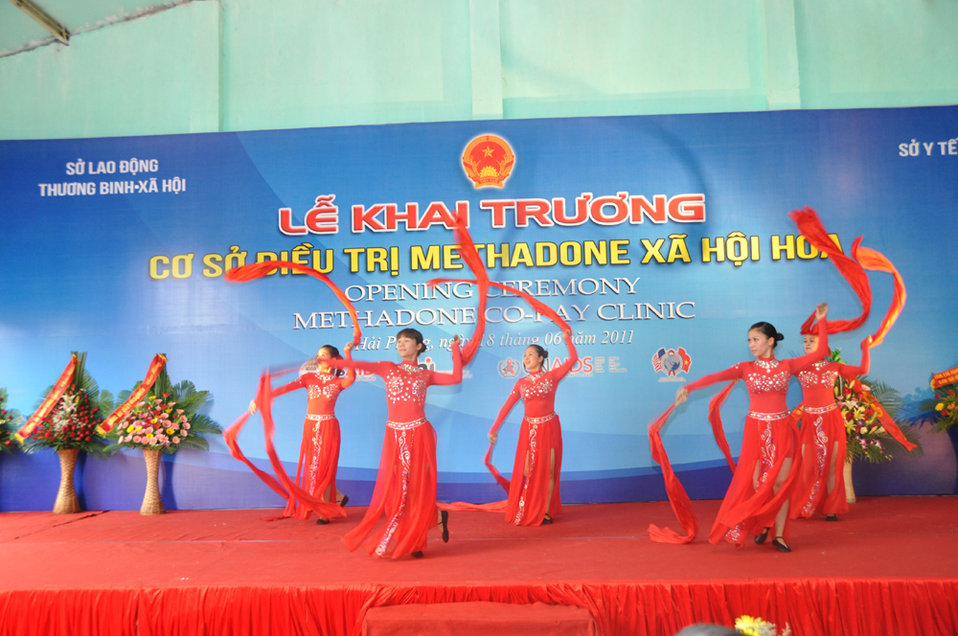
Co-pay Methadone Treatment Center Opens in Hai Phong on June 18, 2011